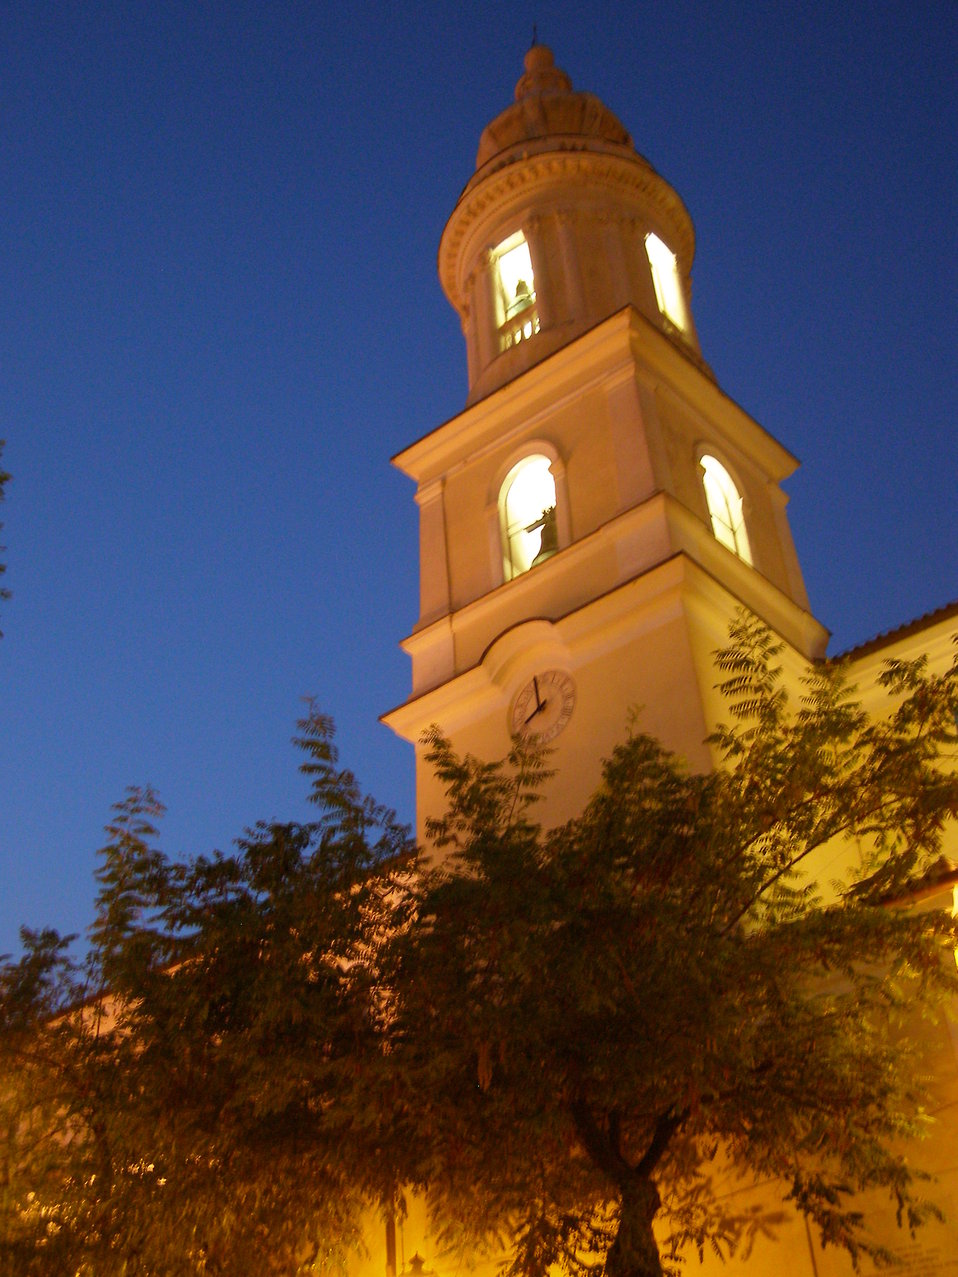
Italiano: Il campanile di Salento